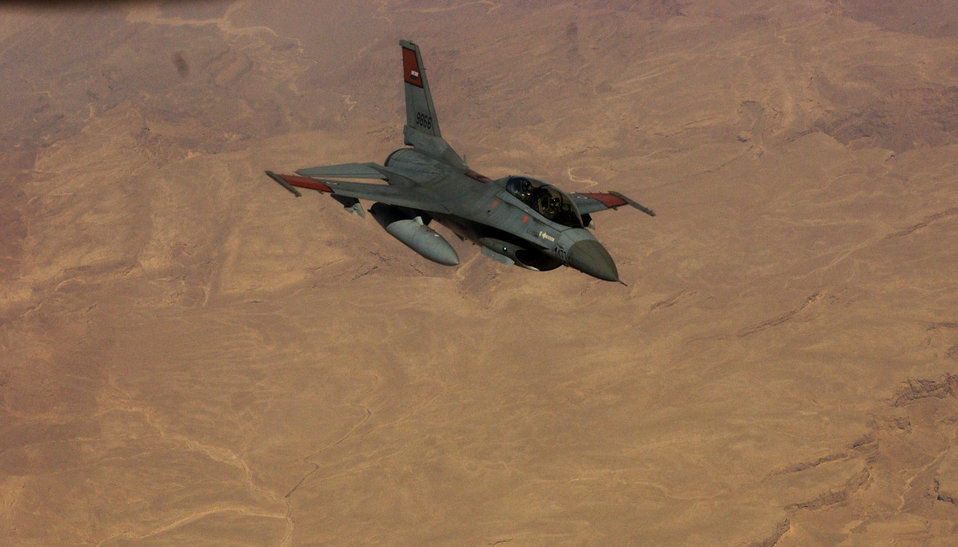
Reservists train with Egyptian airmen

An Egyptian air force F-16 Fighting Falcon prepares to make contact with a KC-135 Stratotanker from March Air Reserve Base, Calif., during in-flight refueling training. A contingent of reservists from the 336th Air Refueling Squadron at March ARB are providing aerial refueling training for Egyptian pilots.